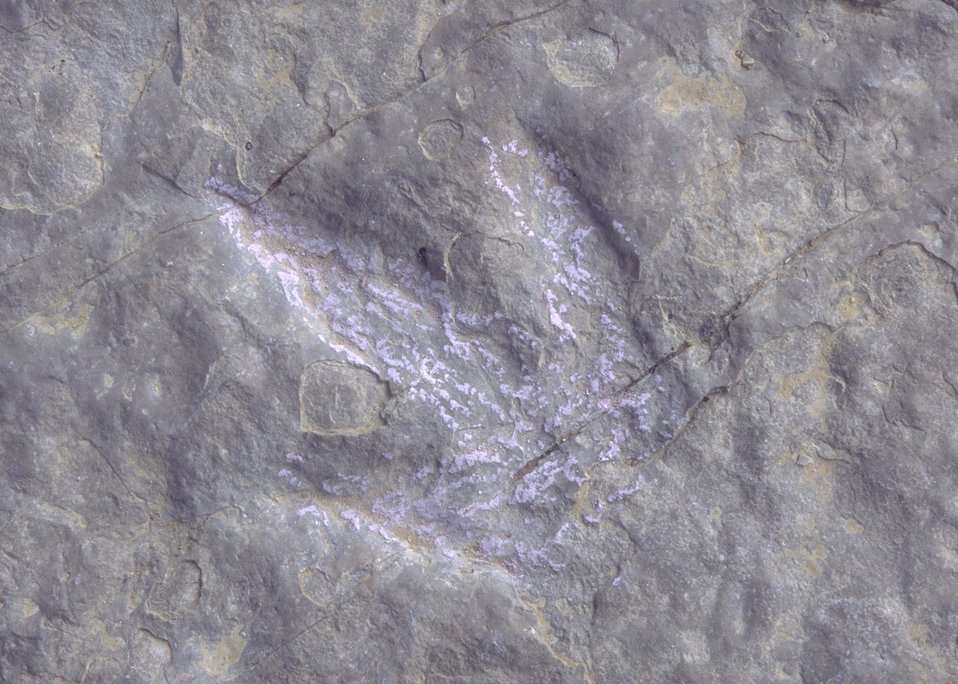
Detail of dinosaur track at the Red Gulch Dinosaur Tracksite, Worland Field Office.